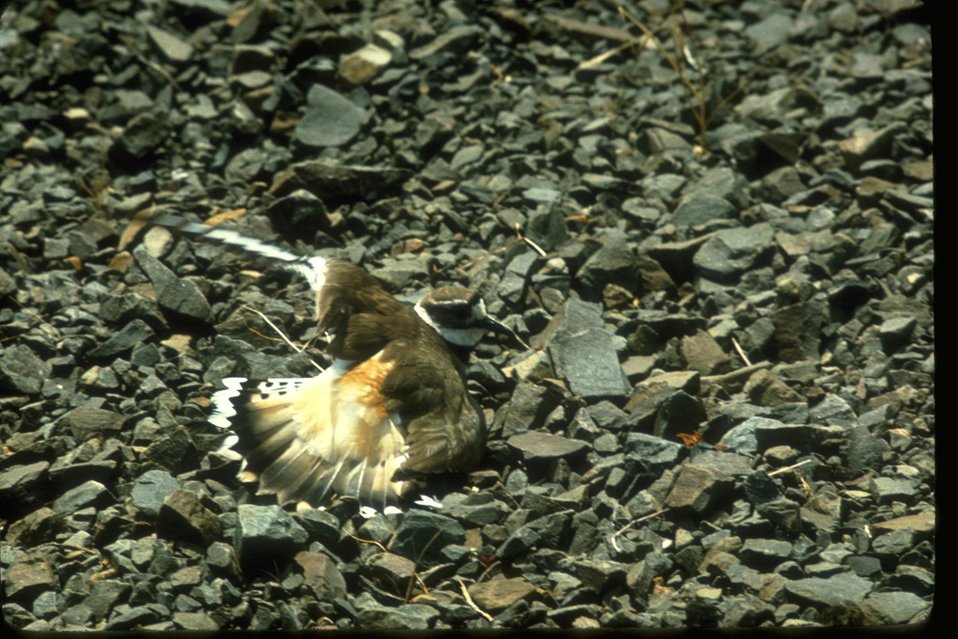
A Killdeer taking off.